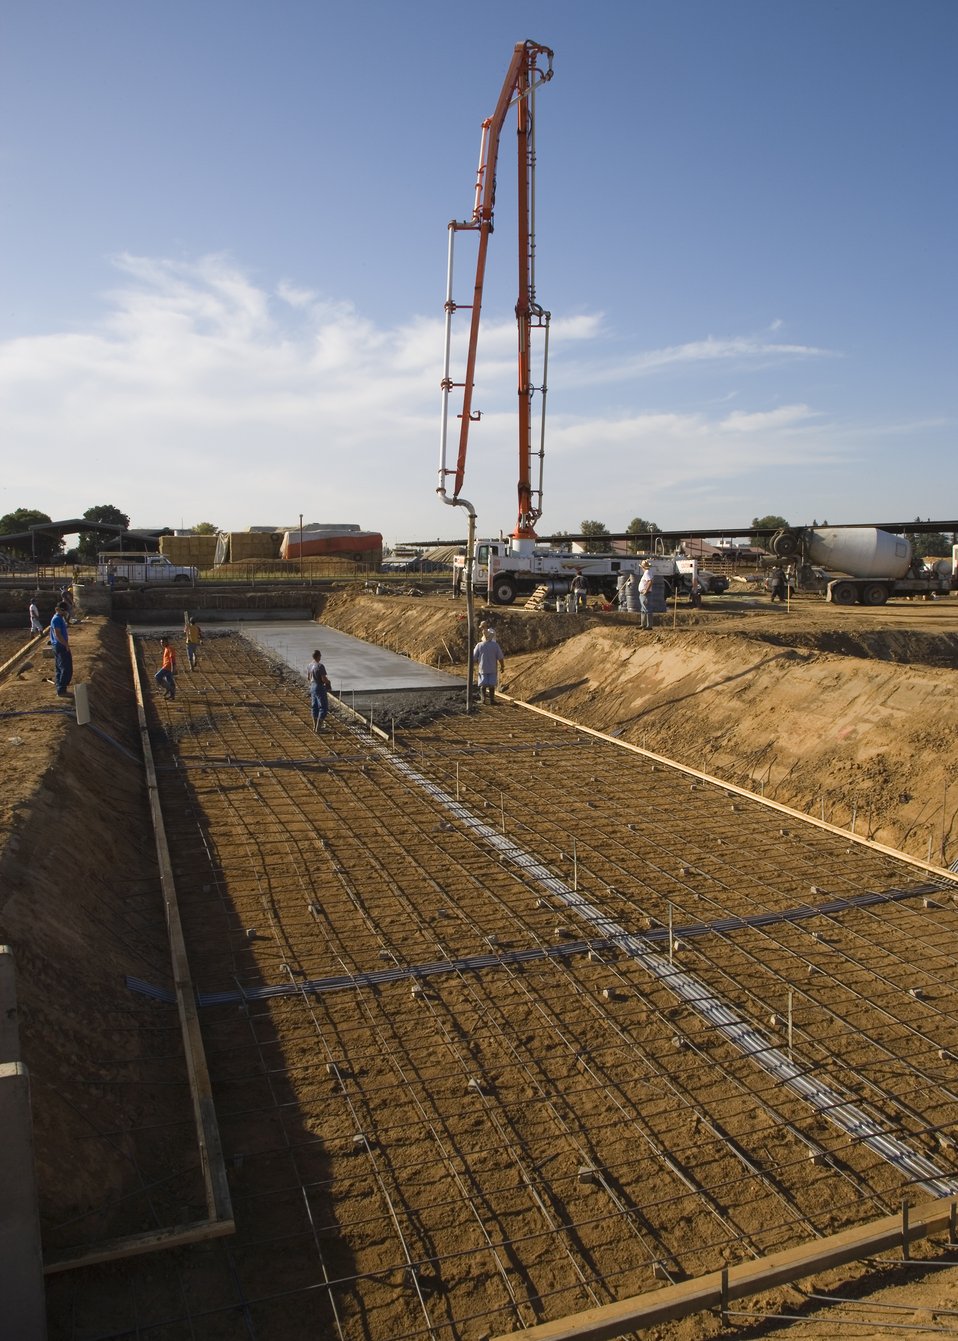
Pouring concrete sgravity separatorat Fresno State University dairy. Fresno, California.